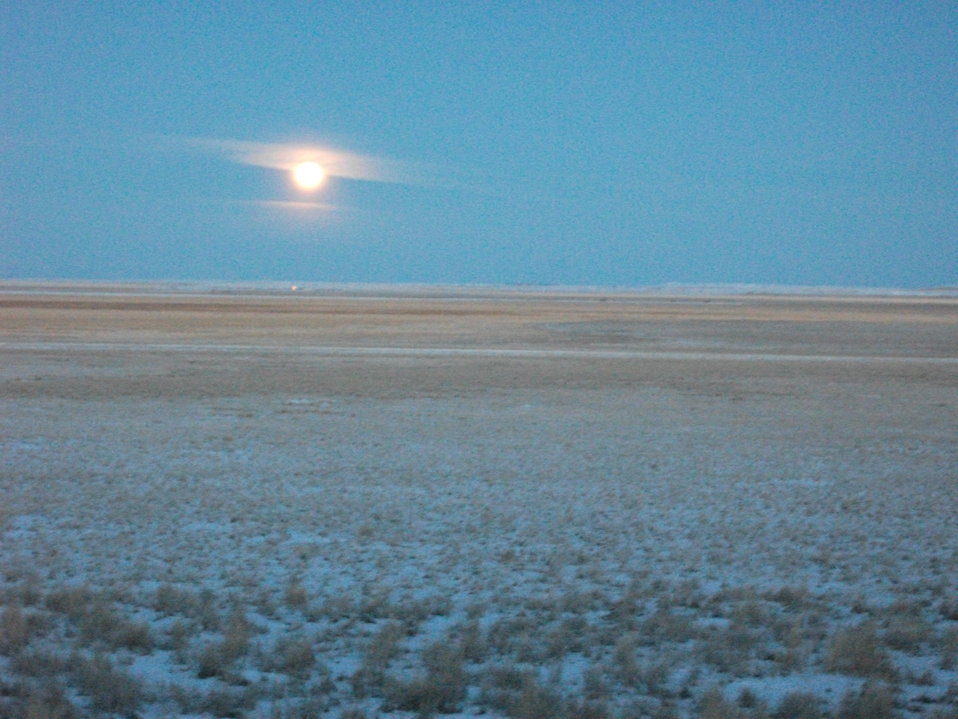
Full Moon On The Refuge

We get some amazing sunrises at the Refuge. You can see why Montana is nicknamed 'Big Sky Country!'